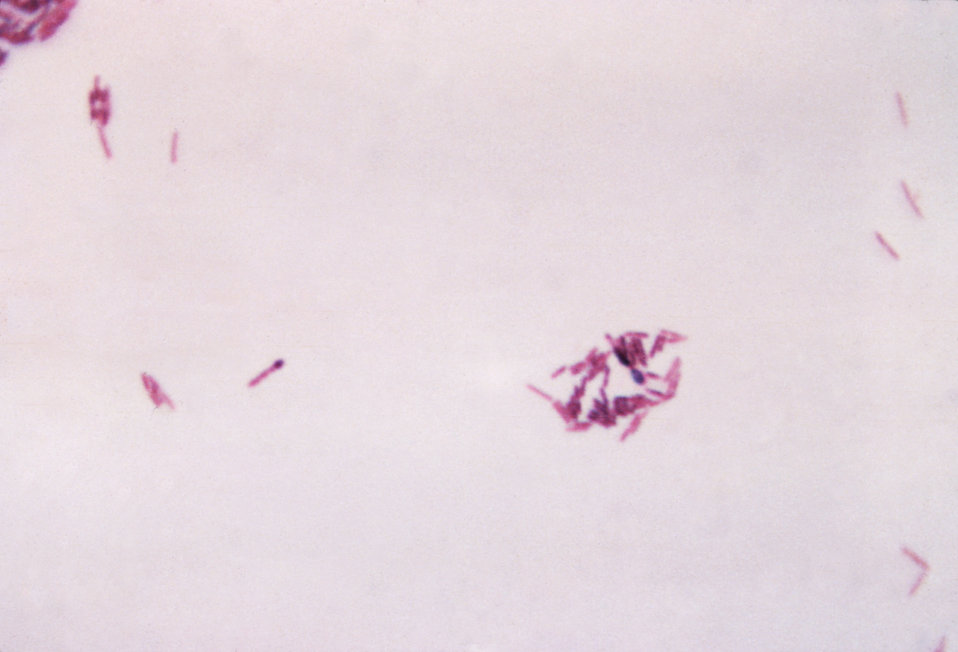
This is a photomicrograph of gram-positive Clostridium innocuum bacteria.